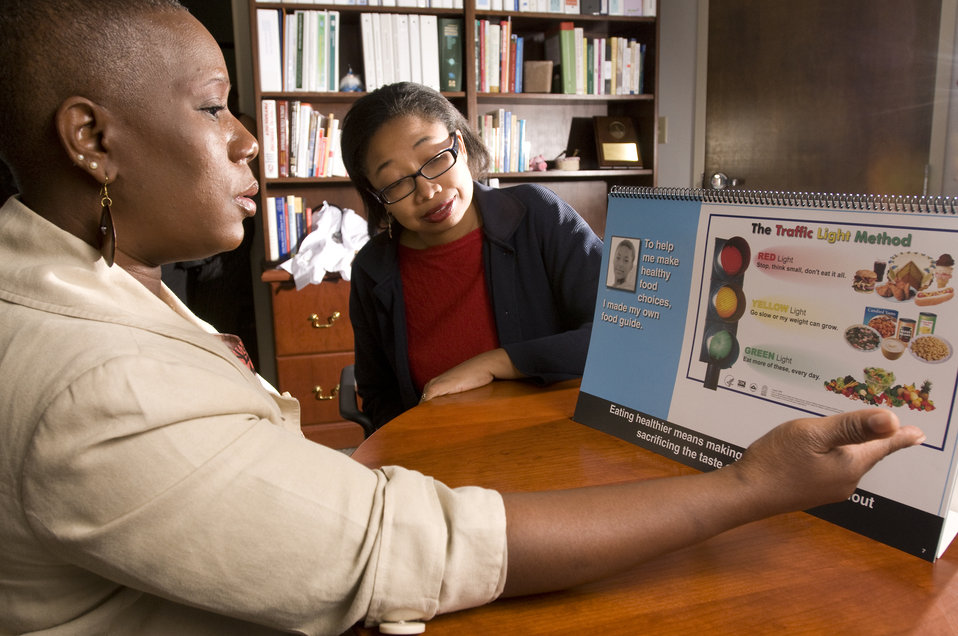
This image depicts a person with diabetes in the foreground listening to a community health worker familiar with the necessary diet needed to maintain control over the detrimental effects of this disease. The health worker was using a flip chart that, for the moment, was turned to a page discussing the use of the 'Traffic Light Method' to label foods. Here, the patient was posing questions to the dietary specialist about the three food groups.